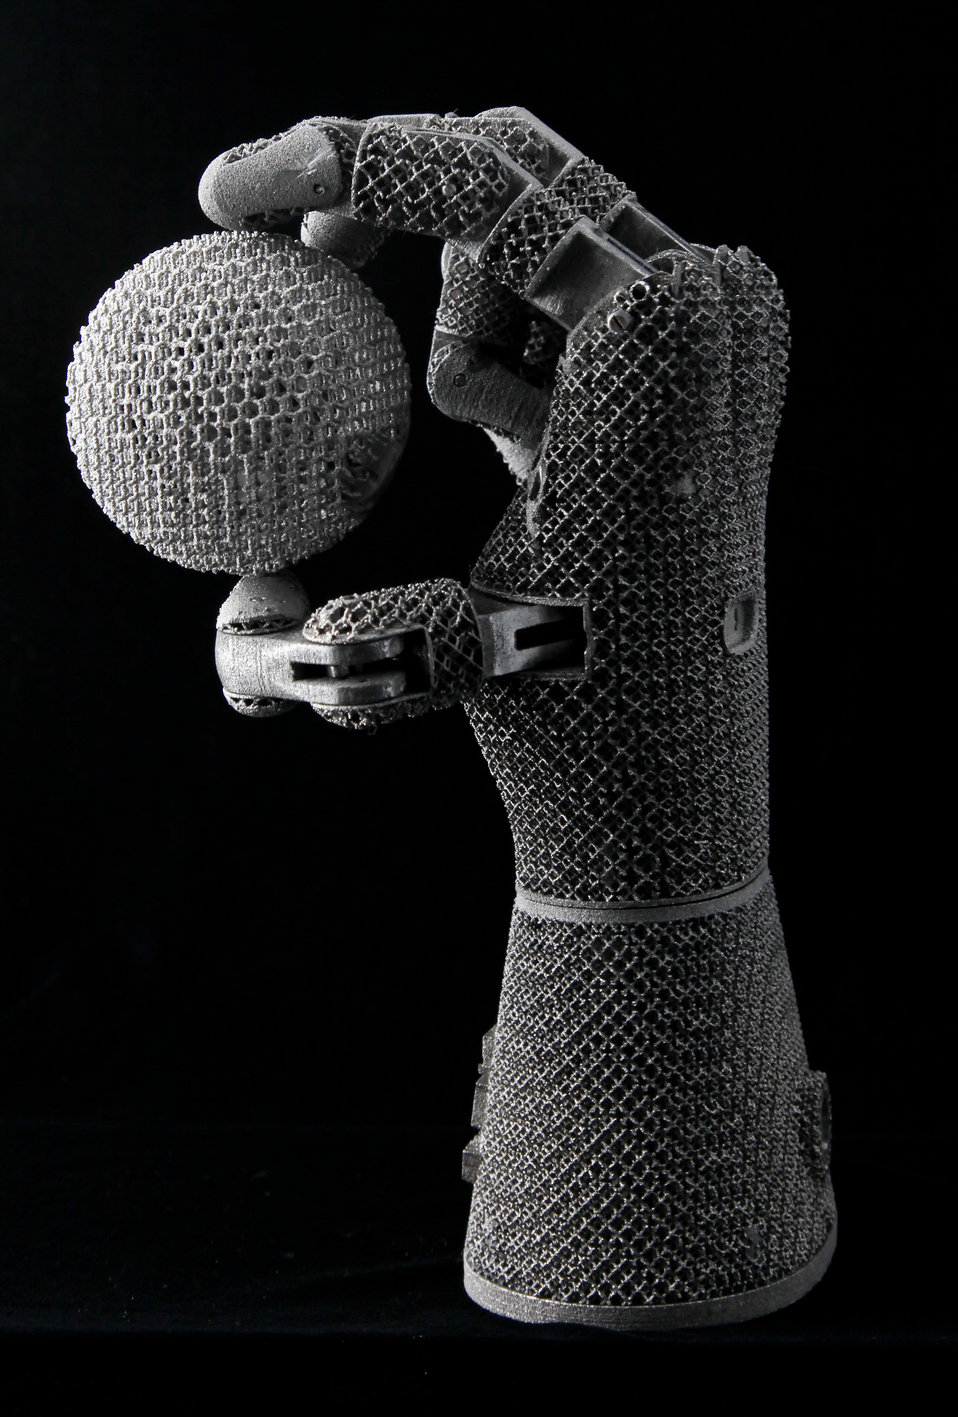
Novel, lightweight, low-cost fluid powered robotic hand fabricated at Oak Ridge National Laboratory using additive manufacturing technology selected for a 2012 R&D 100 Award.

Electron-beam additive manufacturing at ORNL produced this fully functional robotic hand and the mesh ball it is holding, both made from titanium powder.